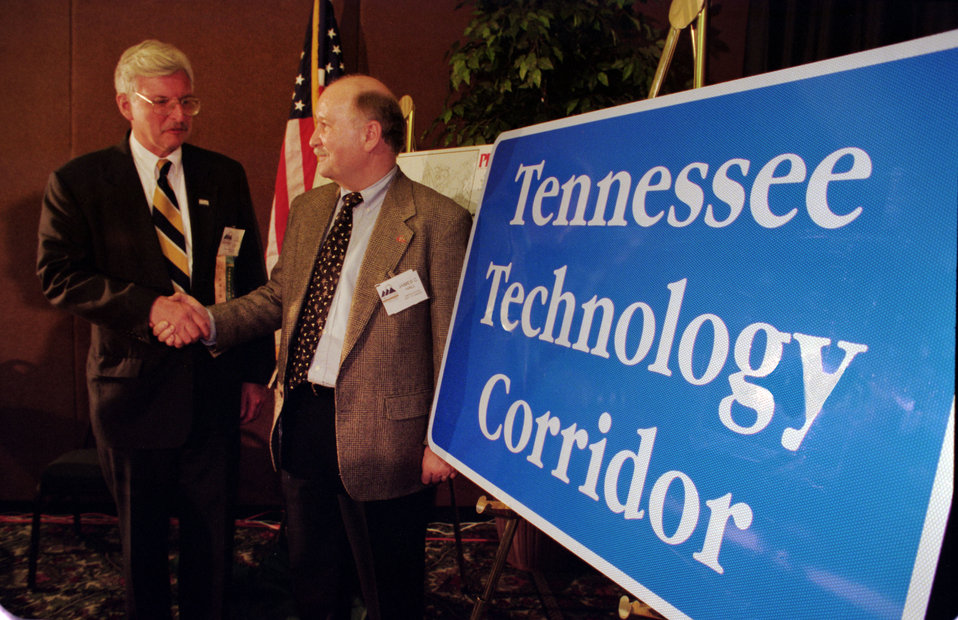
Tri-City Summit at Kingsport

98-210-12 DOE photo by Lynn Freeny

Tri-City Summit at Kingsport Tennessee 5-27-1998